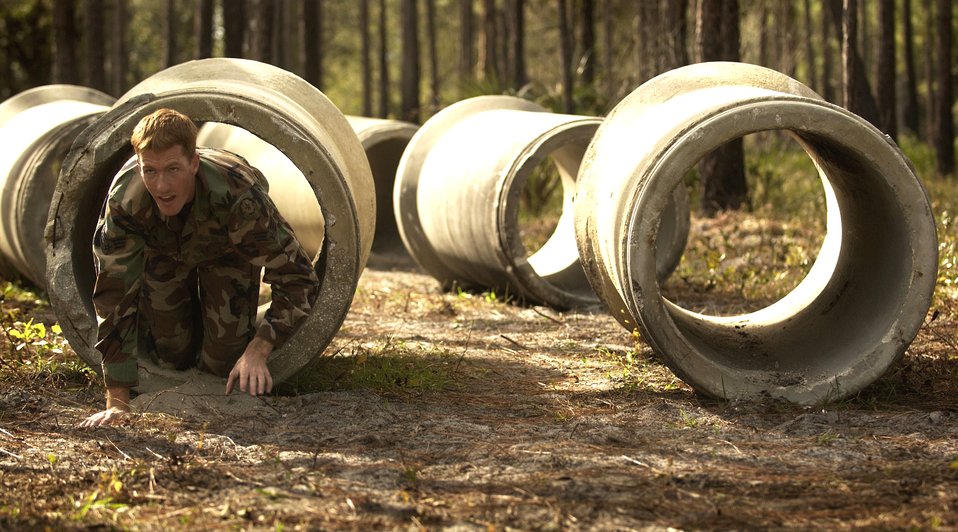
Dragon Challenge

AVON PARK, Fla. -- Senior Airman John Welter, crawls through concrete barrels during an obstacle course here Dec. 5 while participating in Dragon Challenge 04. Dragon Challenge, an annual competition held where airmen compete for top honors in physical strength, endurance, mental and emotional challenges. Airman Welter is assigned to the 21st Air Support Operations Squadron at Fort Polk, La.